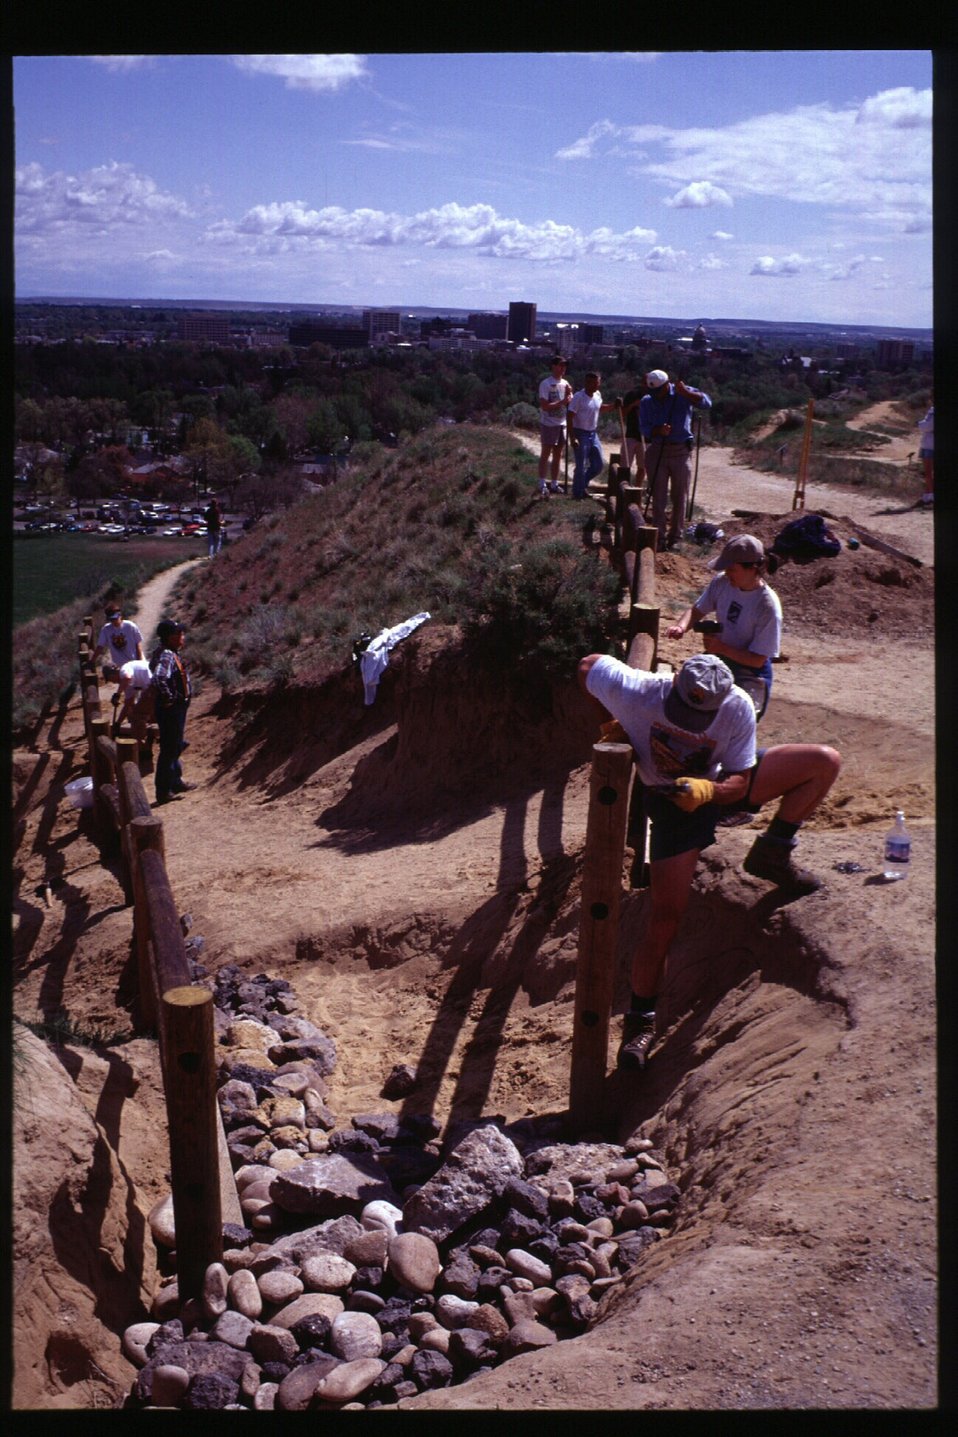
Rangeland and environmental education Boise Front Tending our Foothills Trail work Camels Back Park Four Rivers Field Office LSRD Lower Snake River District